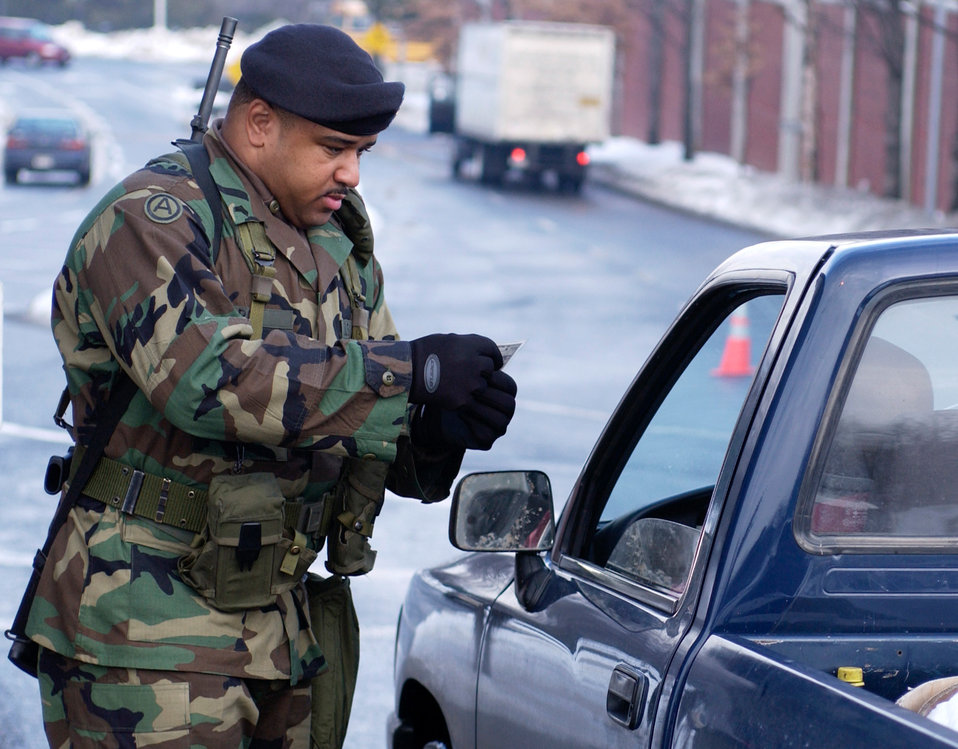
Army National Guard begins air base security mission

WASHINGTON -- A soldier from the Army National Guard's 276th Military Police Company in Washington checks identification at Bolling Air Force Base, D.C., on Feb. 21. Up to 10,000 soldiers will help secure Air Force installations worldwide while the Air Force phases in plans to beef up its own security forces.